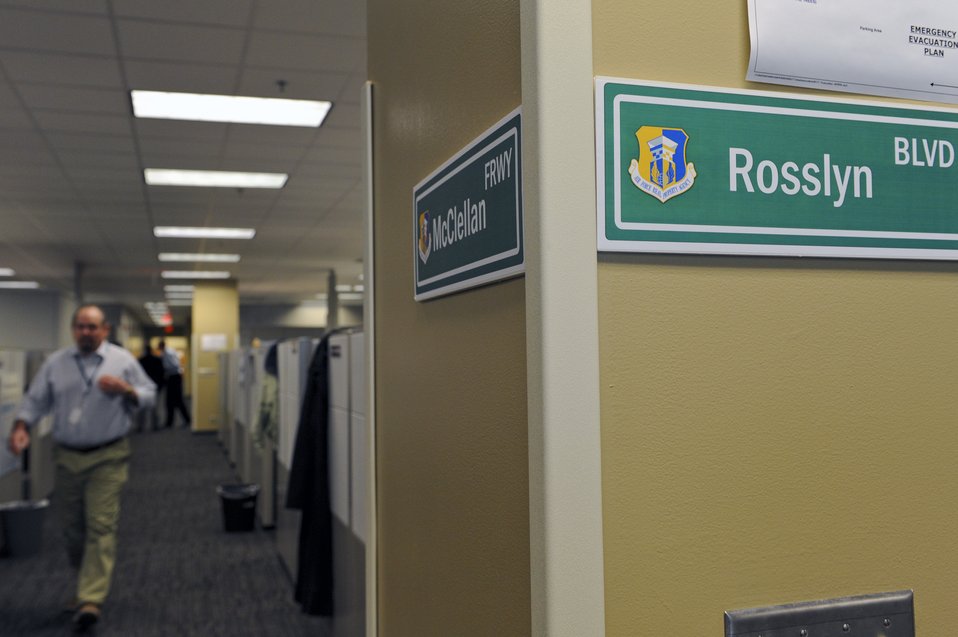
Air Force Real Property Agency officials are the first tenant to move into the newly renovated, quarter-mile long building at the Port San Antonio, Texas. Building 171 will be home to 11 Air Force agencies and will house 2,800 Air Force, government and civilian staff. AFRPA officials posted signs in the hallways to navigate work spaces in the quarter-mile long building.